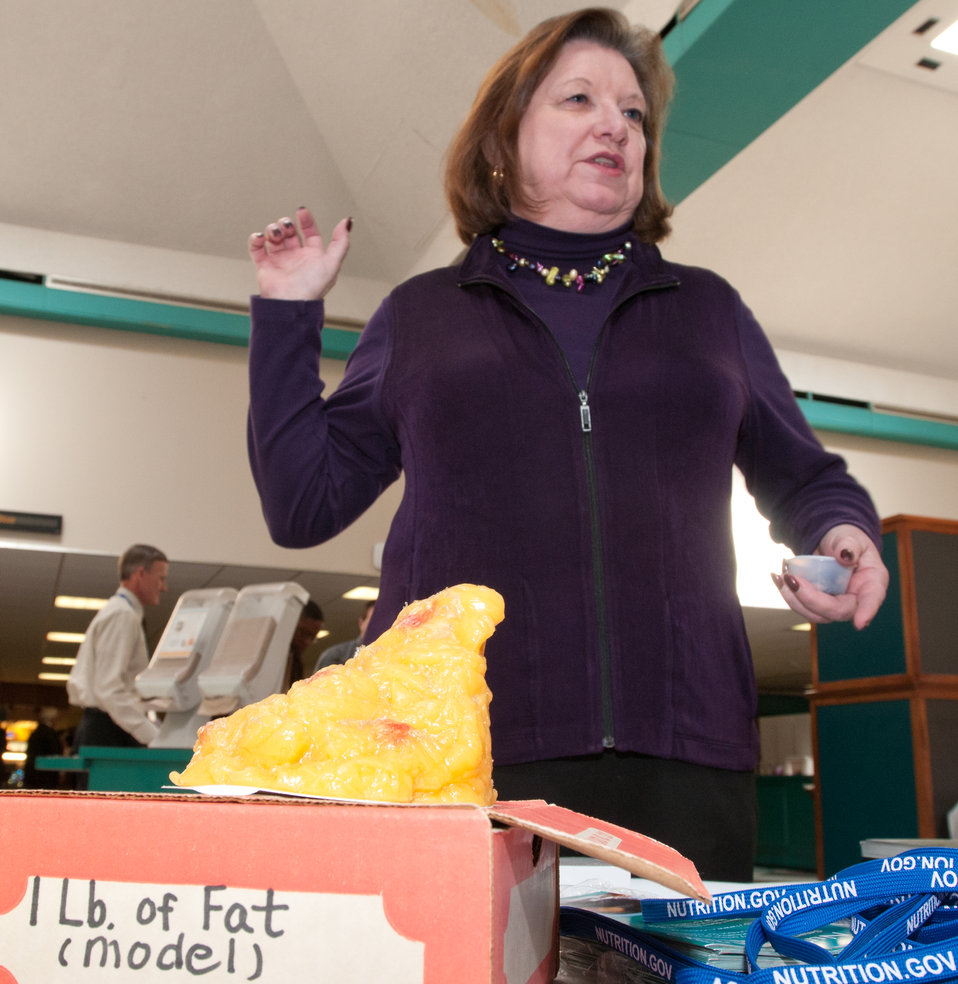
A Department of Agriculture employee reacts to finding out that the yellow plastic model represents one pound of fat, and serves as a motivator to eat healthy at the Department of Agriculture celebration of the introduction of the Dietary Guidelines for Americans 2010, an informational event in the Whitten Café in Washington, D.C., on Wednesday, March 2, 2011.